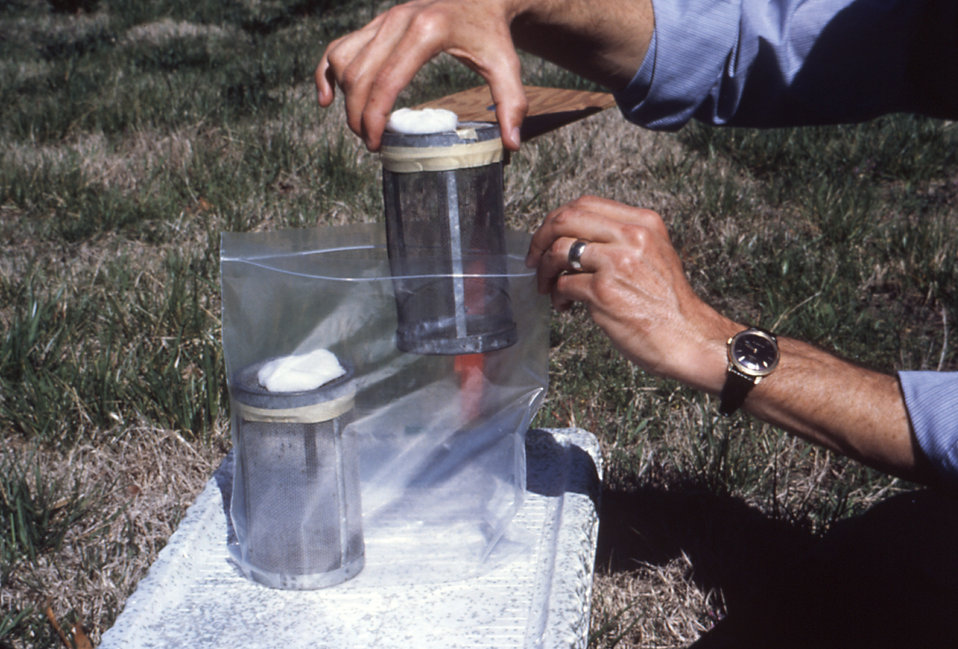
This 1981 photograph depicted two bioassay cages being loaded into a plastic bag, which was shipped after having been used to collect a catch of mosquitoes from the environment.